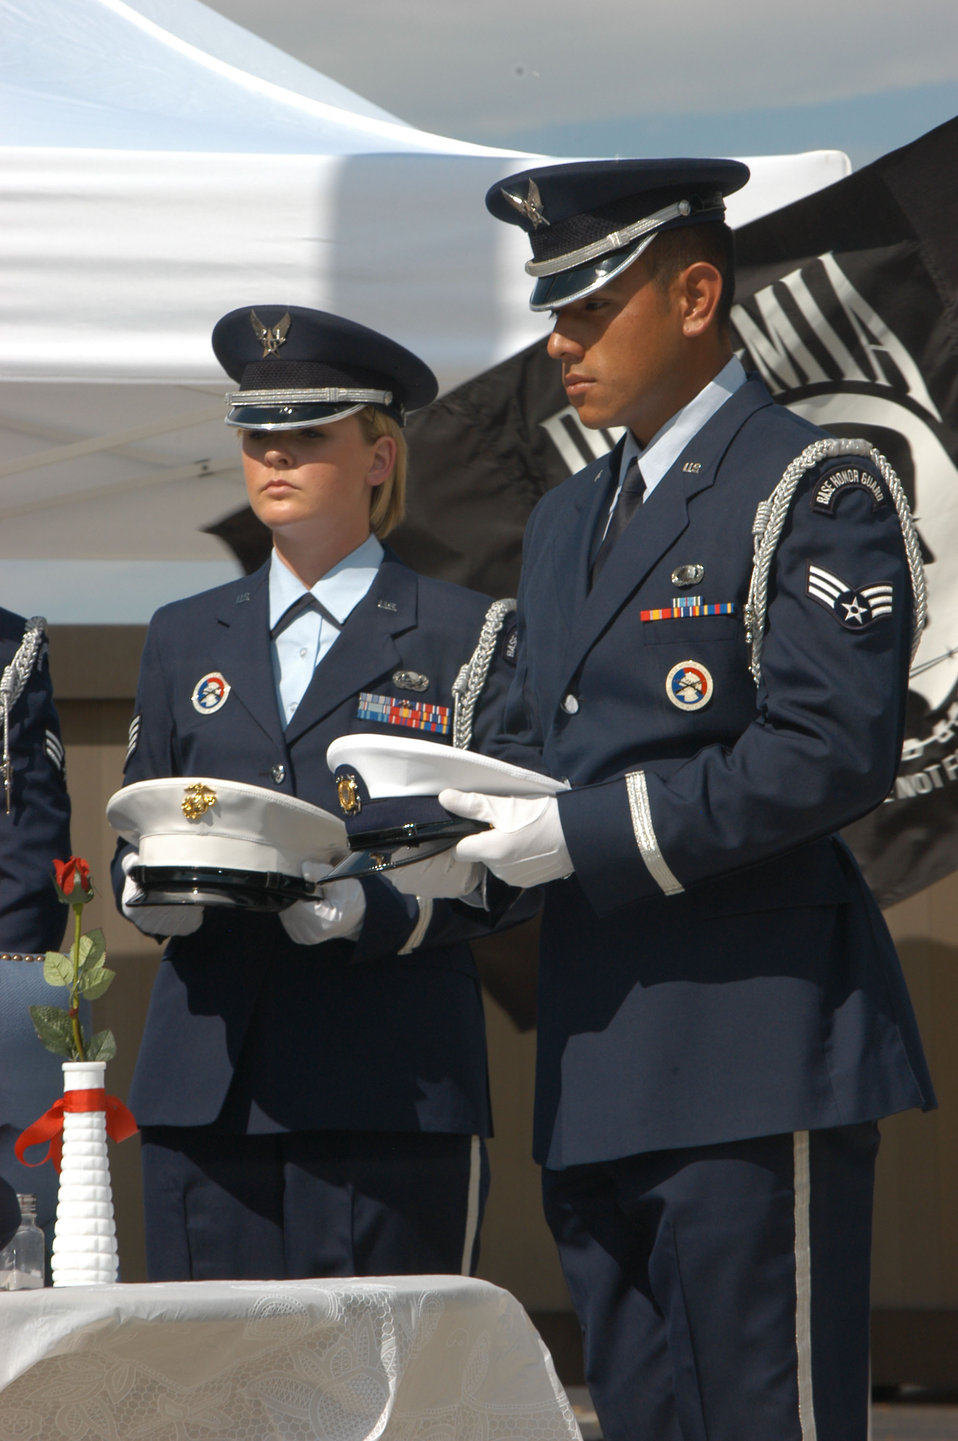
Denver-area units hold POW/MIA Recognition Day vigil

Staff Sgt. Jessica Phelps and Senior Airman Joseph Morales, members of the Air Reserve Personnel Center and Defense Finance and Accounting Service honor guard, wait to place service hats on the POW/MIA table during a Prisoner of War and Missing in Action remembrance ceremony in Denver Sept. 14.